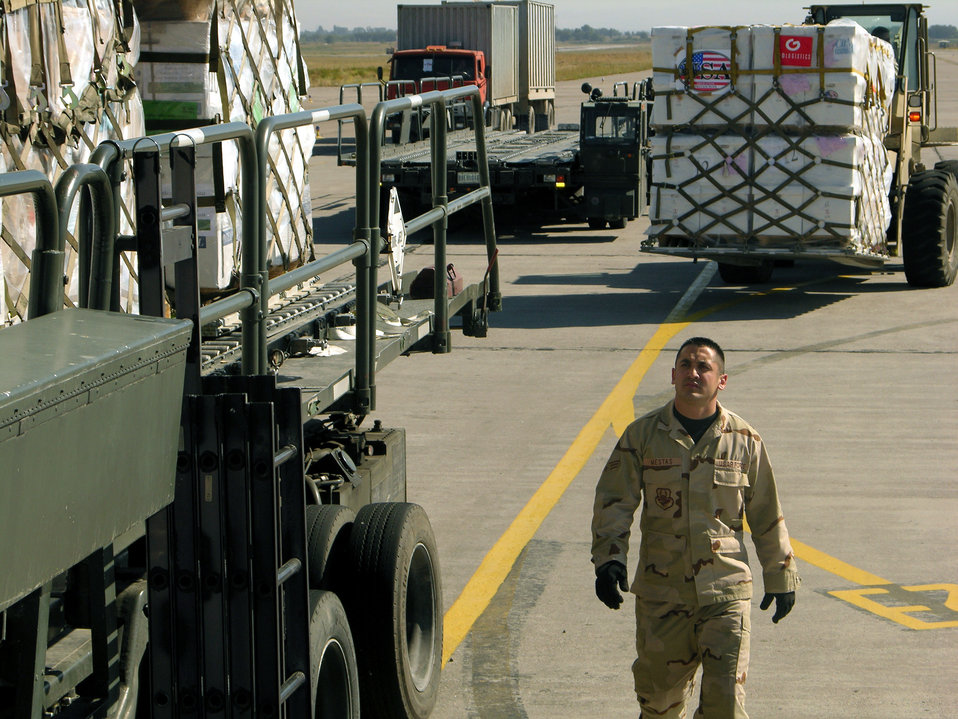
Humanitarian airlift brings $15 million in aid to base

MANAS AIR BASE, Kyrgyz Republic -- Senior Airman Ramon Mestas checks the cargo from a C-17 Globemaster III from McChord Air Force Base, Wash., on Sept. 23. More than $15 million worth of medicines and medical supplies were flown in. Airman Mestas is assigned to the 376th Logistics Readiness Squadron here.